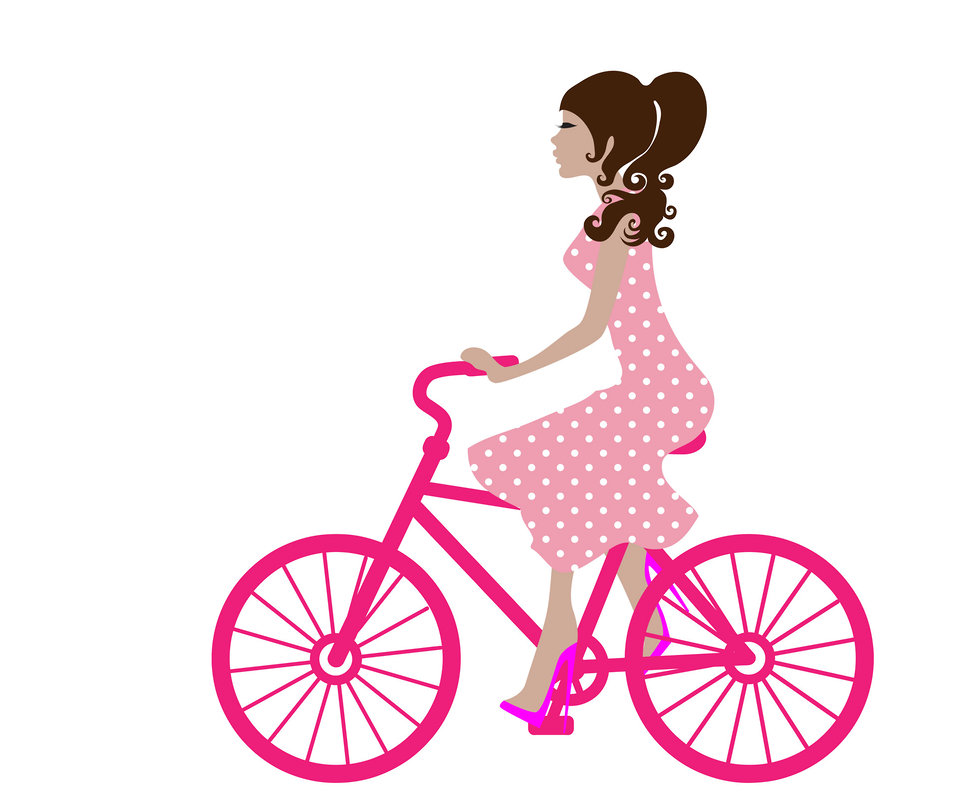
Girl on bike clipart

Glamorous young woman on a pink bicycle clipart for scrapbooking.